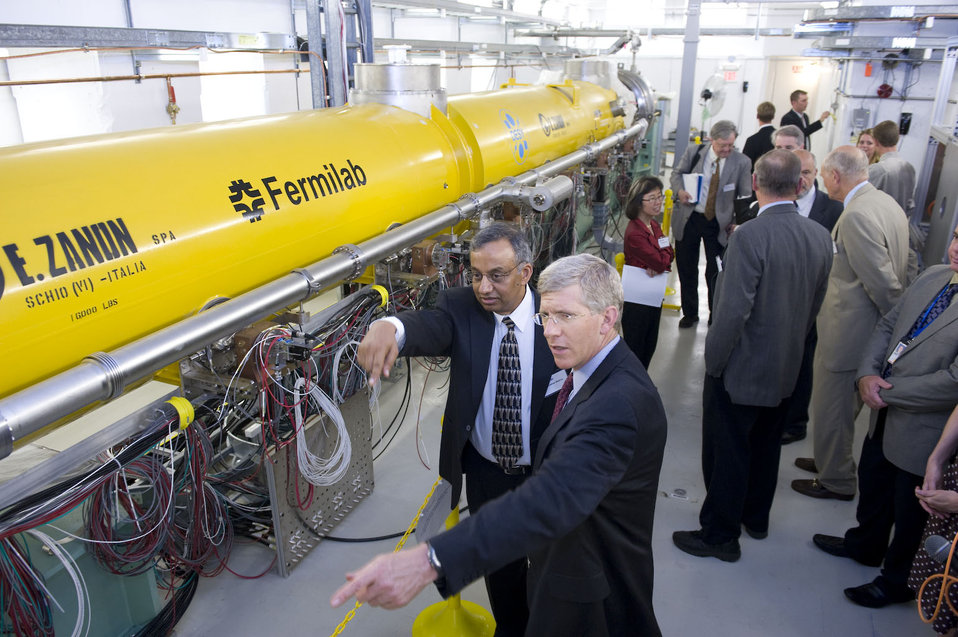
In collaboration with U.S. industry and laboratories in Europe and Japan, Fermilab is building a test accelerator based on superconducting accelerator components that are cooled to minus 450 degrees Fahrenheit.